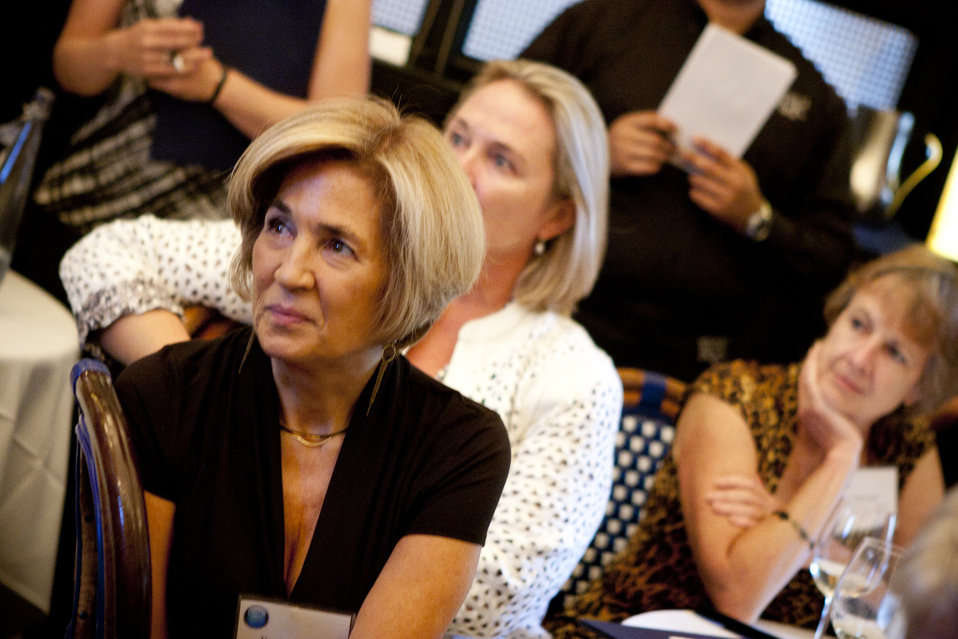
WomenandEnergy 47